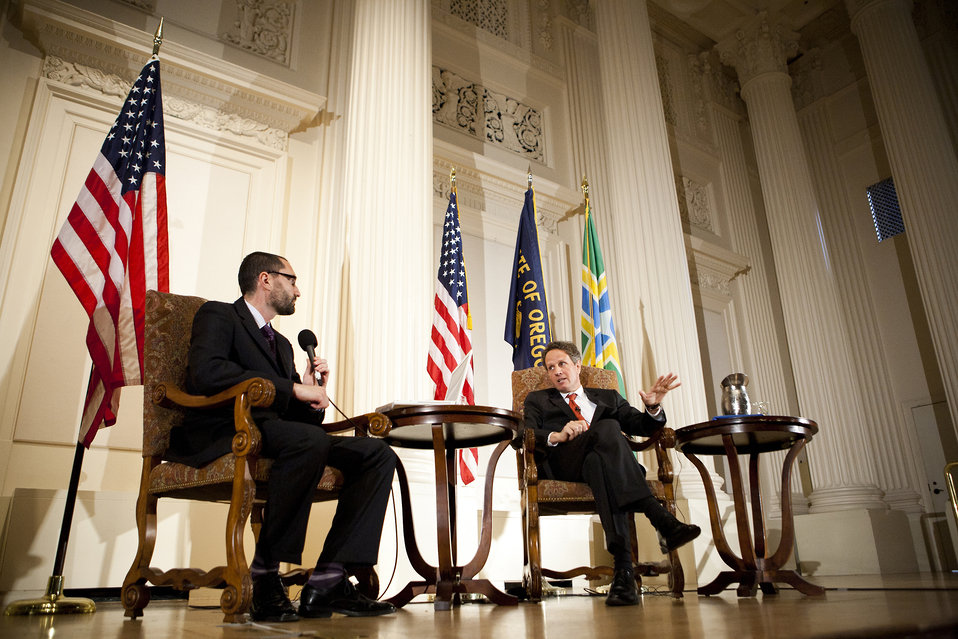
Secretary Geithner Speaks at the Portland City Club

Treasury Secretary Tim Geithner delivered remarks before the Portland City Club and participated in a conversation about the state of the U.S. economy with David Miller of Oregon Public Broadcasting.